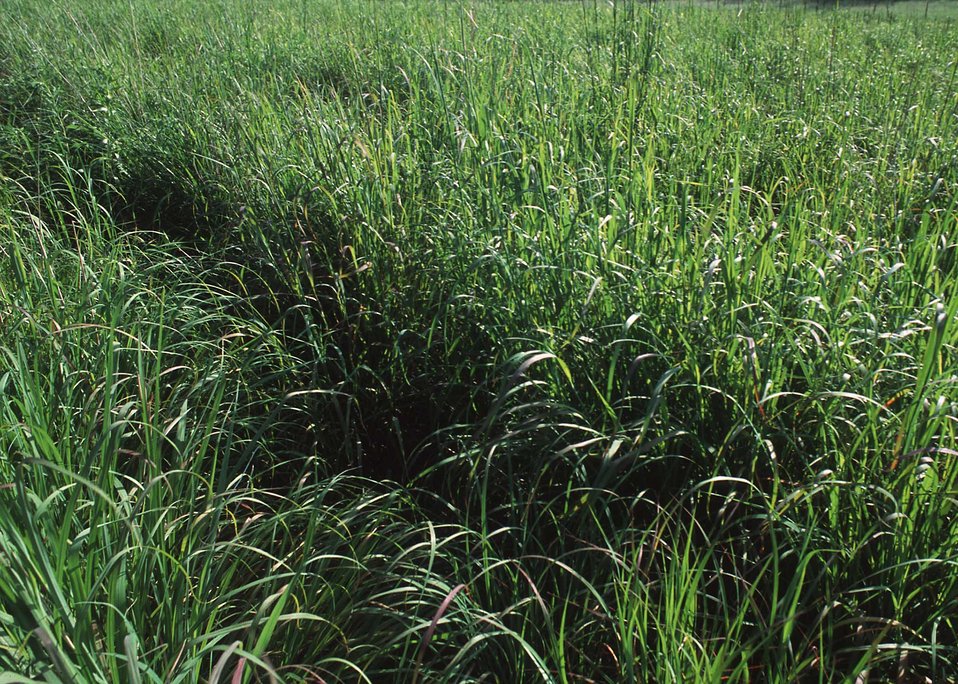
Vibrant growth of grasses in a warm season grassland habitat restoration project.